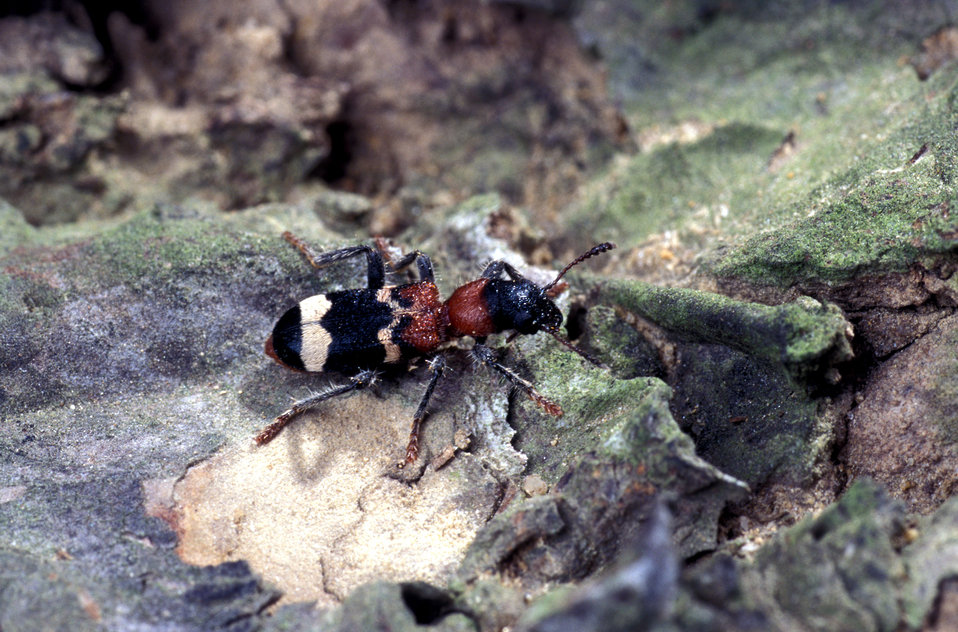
This ant beetle (Thanasimus formicarius) attacks a pine shoot beetle on Feb. 22, 2006. This predatory beetle devours approximately three pine shoot beetles daily for up to 3 months. The pine shoot beetle is a destructive pest of pine trees in about 150 U.S. counties.